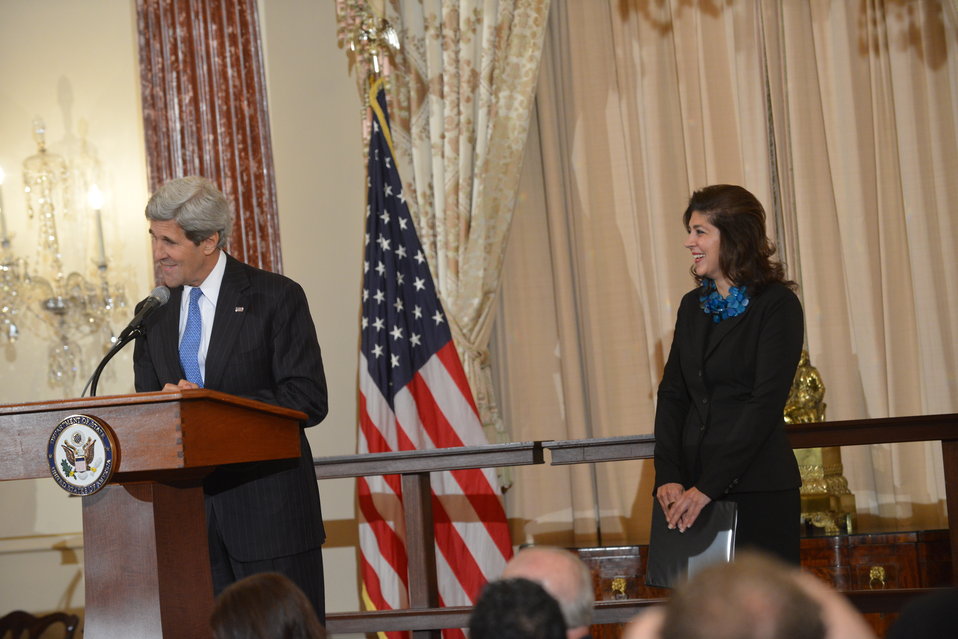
Secretary Kerry Hosts an Iftar

U.S. Secretary of State John Kerry hosts an Iftar to commemorate the month of Ramadan at the U.S. Department of State in Washington, D.C., on July 24, 2013.